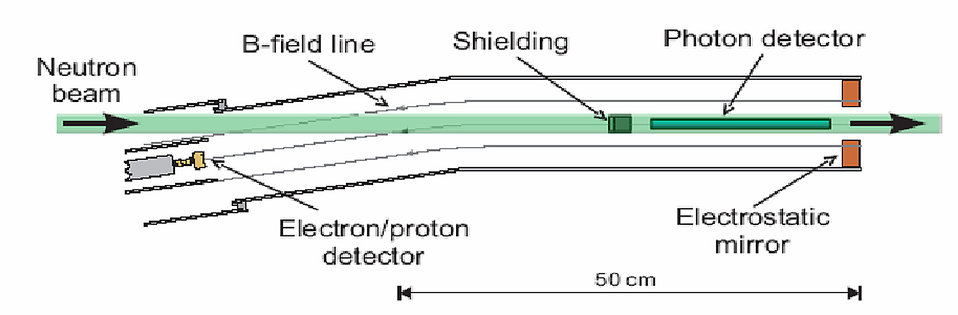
NIST,University Team Records Rare Glimpses of Light from Neutrons

A top-view illustration of the detection scheme for measuring the radiative decay of the neutron. The shielding and photon detector lie below the neutron.